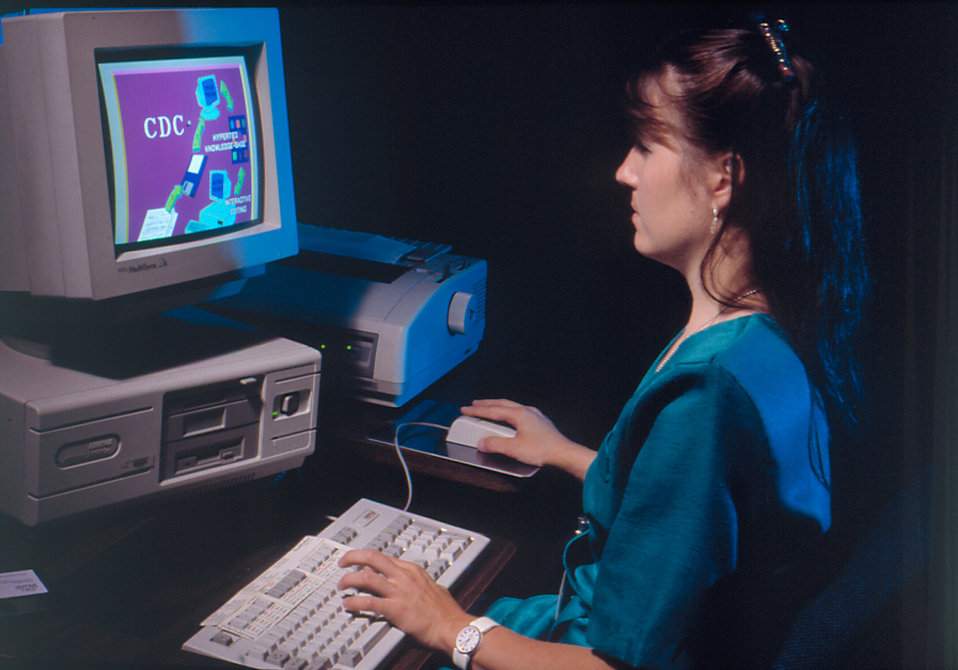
CDC Employee working at computer.